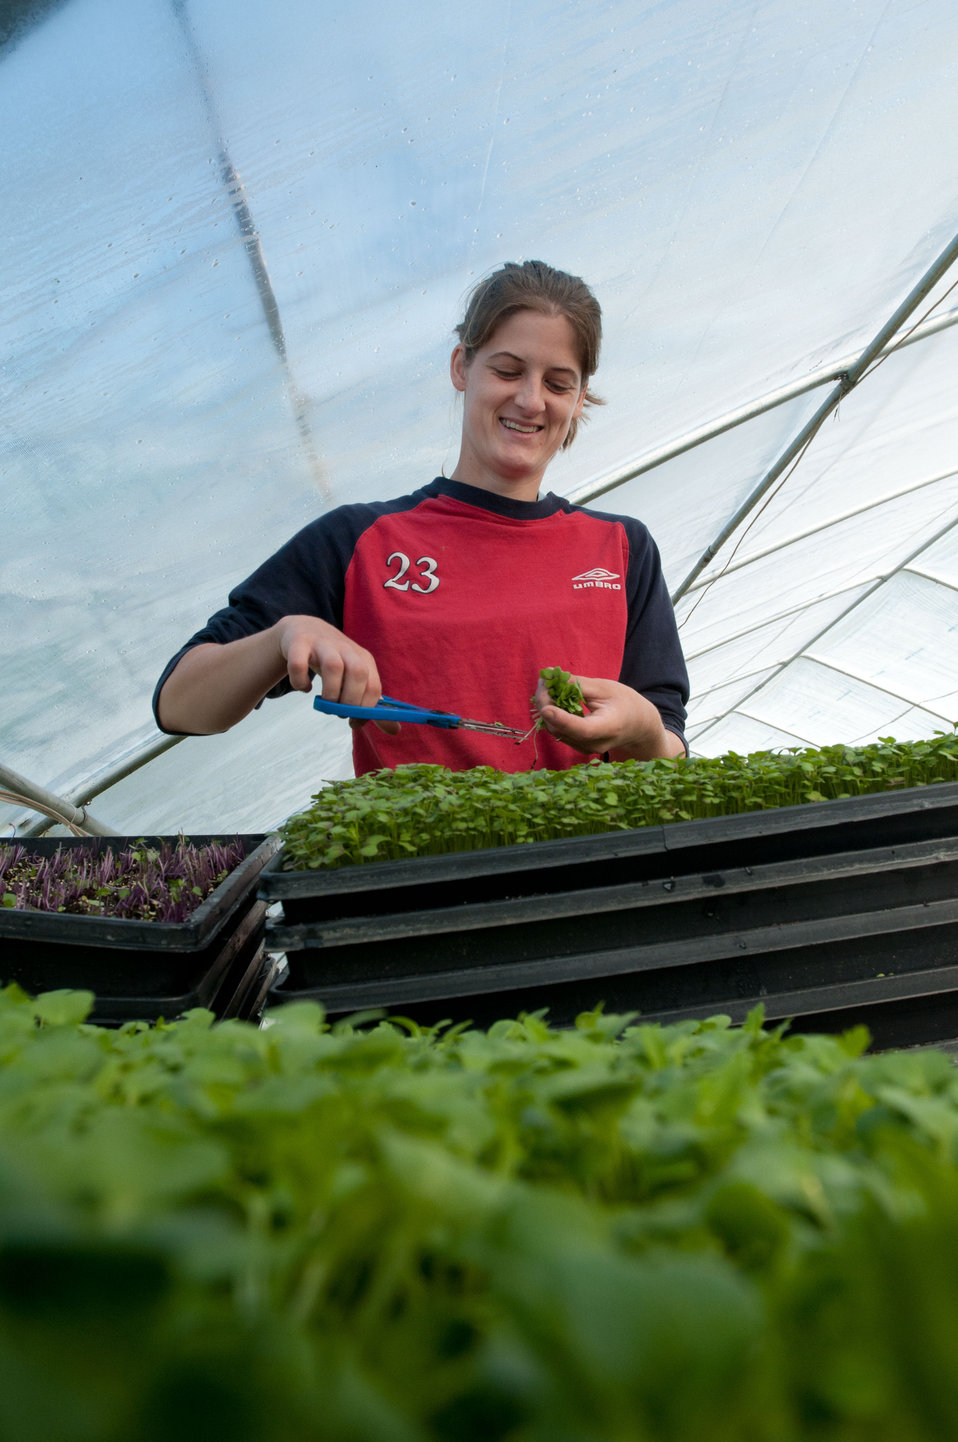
Kate Lainhart gently lifts away a small number of sunflower sprouts she cut for the perfect bite-sized micro greens length for Manakintowne Specialty Growers, a 21-acre farm in Powhatan County, Virginia, on Friday, May 6, 2011. The farm where Jo Pendergraph, her family and team raise specialty produce for chefs and markets of Richmond, Charlottesville and Williamsburg, VA area. This includes the online food hub of Lulus Local Food served by the Fall Line Farms cooperative. This is one of the farms that chefs get those seemingly unique greens such as French Sorrel, Pea Shoots, Frisee, Tat soi, Mizuna, Pink/green radish shoots, Sunflower shoots, Baby red mustard, Tuscan Kale, Beet greens. All harvested by hand and scissors. As well as micro greens such as Pak choi, Tat soi, Mizuna, Purple kohlrabi, Shungiku (edible chrysanthemum), Ruby chard, Purple/Daikon/Triton radish, Red amaranth and Bull's Blood Beet. Edible flowers such as African Blue Basil, Nasturtiums, Johnny Jump Ups, and Chive blossoms Dianthus (pinks) are grown here. The seasonal choices are listed by suppliers and ordered by members on Lulus Local Food website, the food is distributed to pick-up points in the Richmond, VA area. They also offer a wide variety of household food staples and specialty fruits, vegetables, meats, soaps, eggs, cheeses, flowers, honey, pastas, sauces, syrups, baked goods, mushrooms, flour and grains from and for the Richmond. VA area.